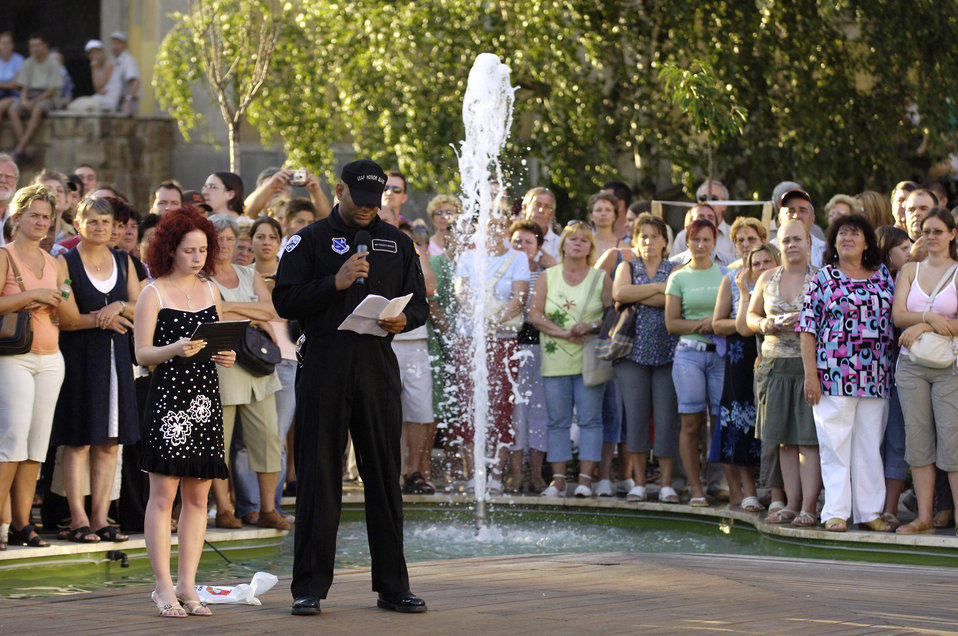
Air Force precision in Hungary

The U.S. Air Force Honor Guard Drill Team performance is narrated in Hungarian and English by Agatha Rostonics, the Hungarian translator to the U.S. Air Force, and Senior Airman Francisco Garrigas, a drill team trainer. The team represented the U.S. armed forces during Regimentfest in Miskolc City, Hungary, July 28.